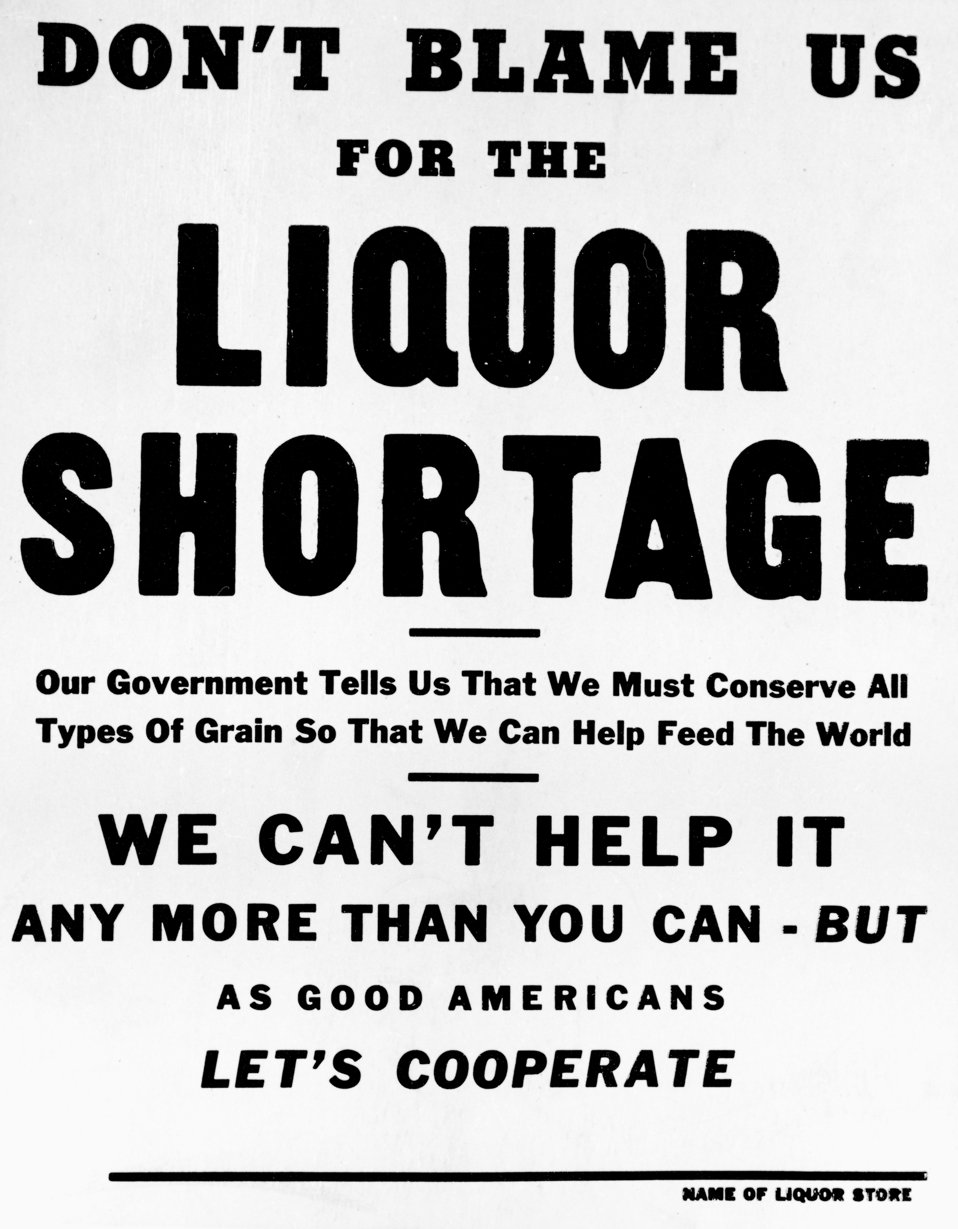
Liquor Shortage Sign 1946 Oak Ridge

1649 DOE photo Ed Westcott 4-24-1946 Oak Ridge Tennessee